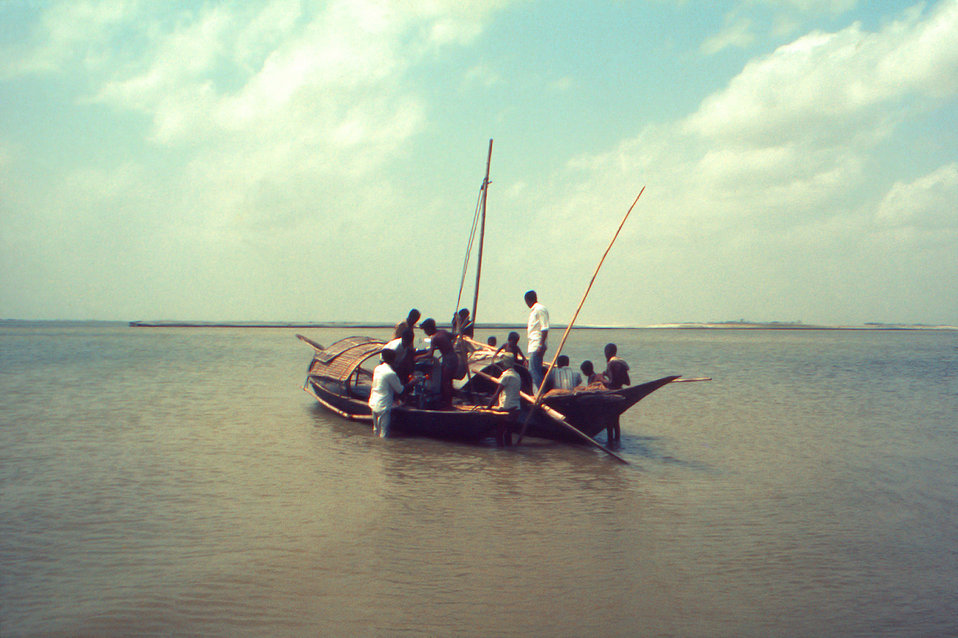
Photographed sometime in the early 1970s, during the worldwide smallpox eradication campaign, this image depicted what appeared to be a fishing boat in a shallow body of water somewhere in the small town of Bangla, which is located in the southern region of Nepal.The Disease